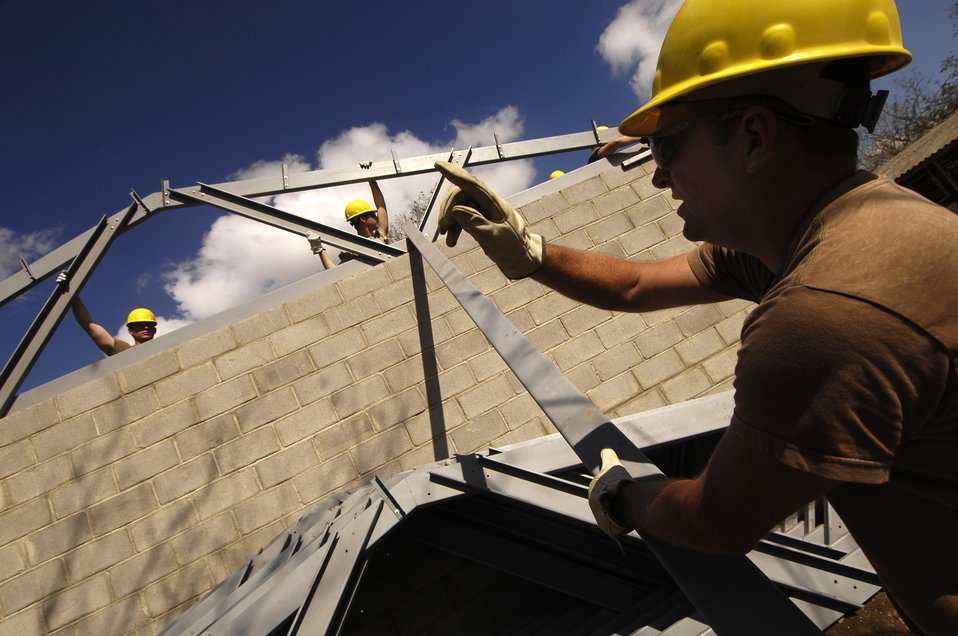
New Horizons-Nicaragua 2007

Army Sgt. Doug Magee, deployed with the 820th Expeditionary RED HORSE Squadron, directs other Soldiers while installing bracing for rafters March 23 at a new school in San Martin de la Calera. Building the school is part of New Horizons-Nicaragua 2007; it will serve about 100 children who currently walk four miles to reach the closest school. Sergeant Magee is deployed to Nicaragua from the South Dakota National Guard's 153rd Engineering Battalion. New Horizons-Nicaragua 2007 is a $7.25 million joint U.S. and Nicaraguan humanitarian and training exercise that will also provide a medical clinic and free health and veterinary care in the Nicaraguan countyside.